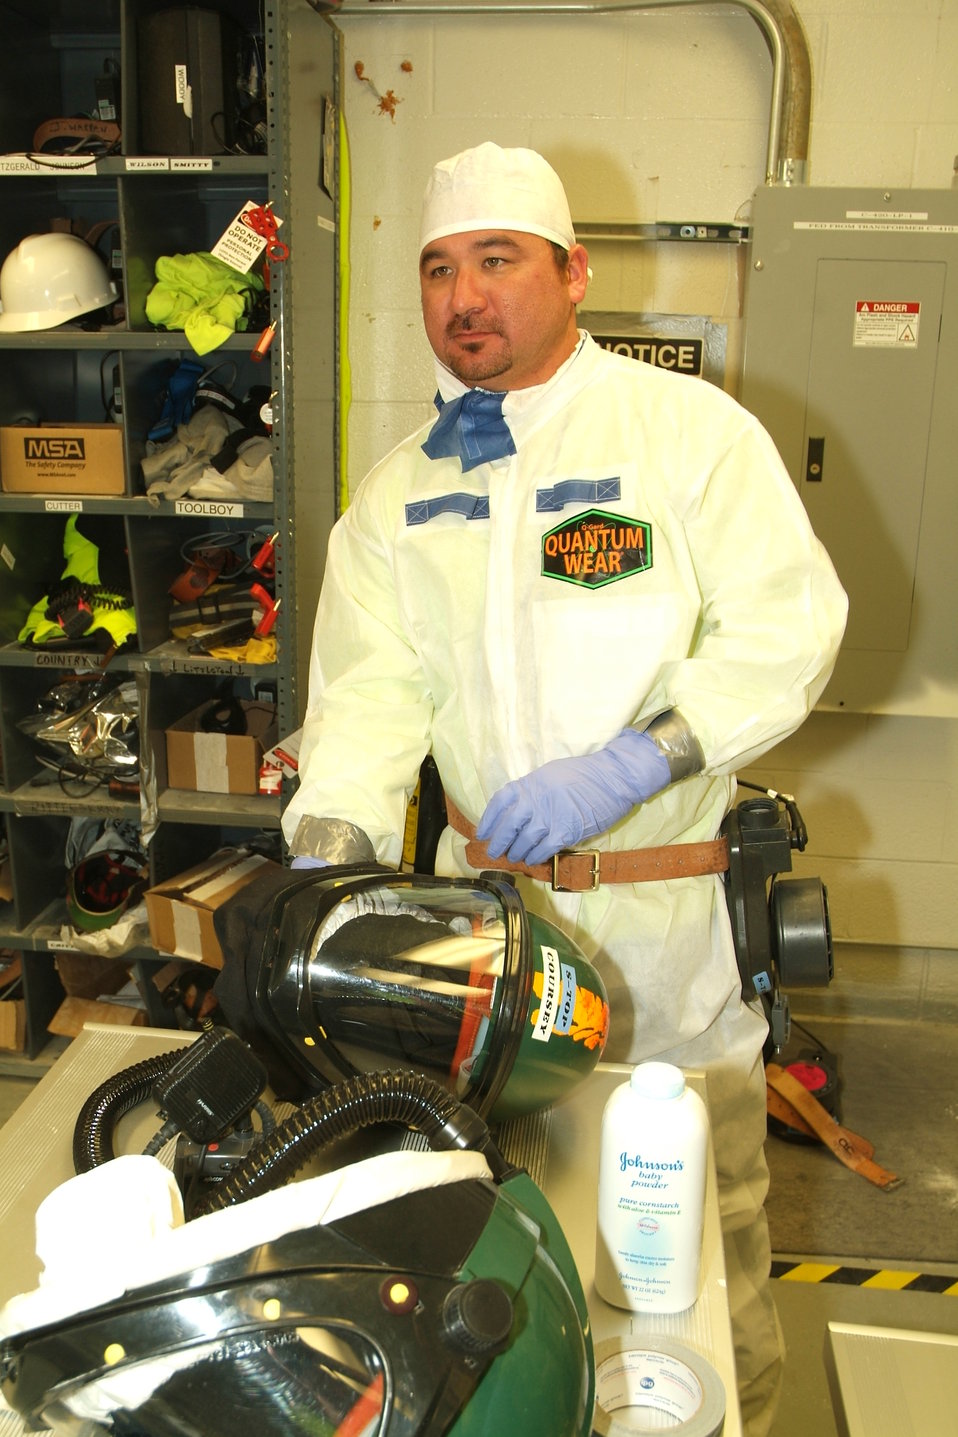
Crane Work at the Paducah Site

Justin Coursey is among three certified crane operators hired with Recovery Act funding to prepare the Feed Plant for partial demolition this spring at the Paducah Site.